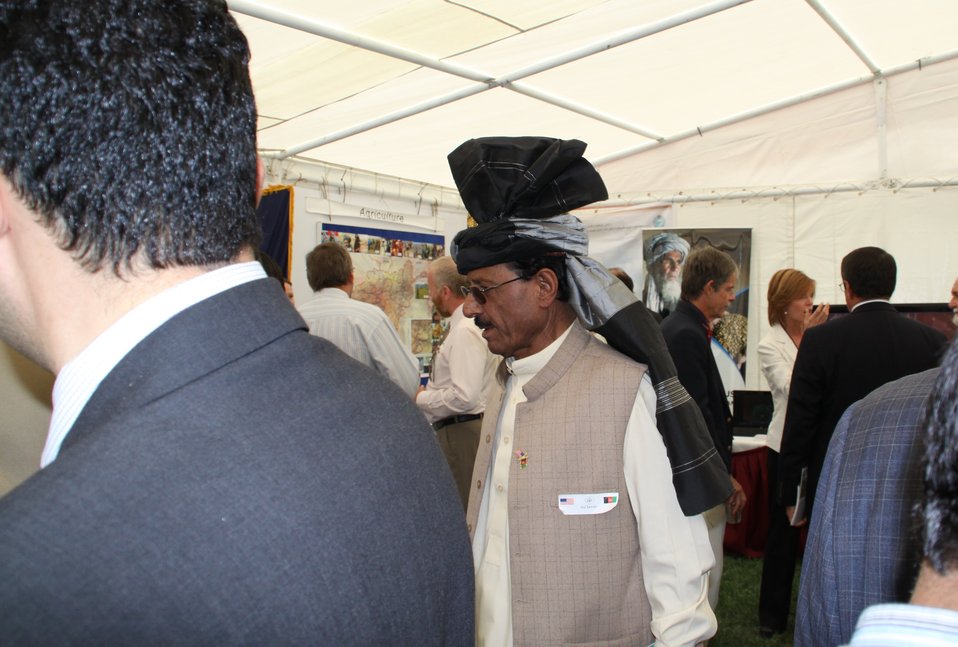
Kabul Official July 4th Celebration